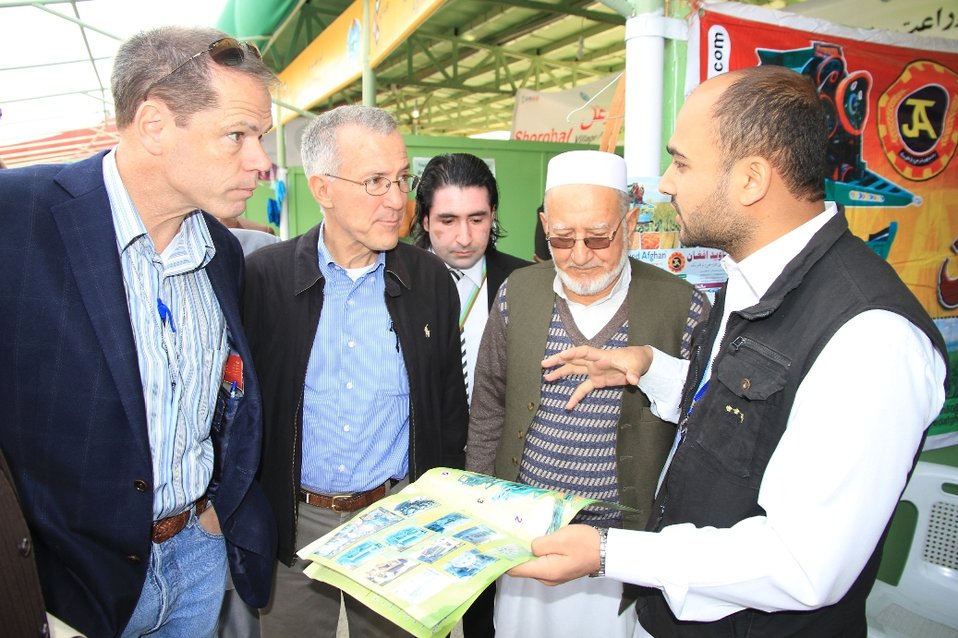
Ag.Fair, October 2013

Irshad (R) an IDEA-NEW employee briefs William Hammink and Larry Sampler about the product line of Jawed Afghan Agro-machinery Manufacturing Company